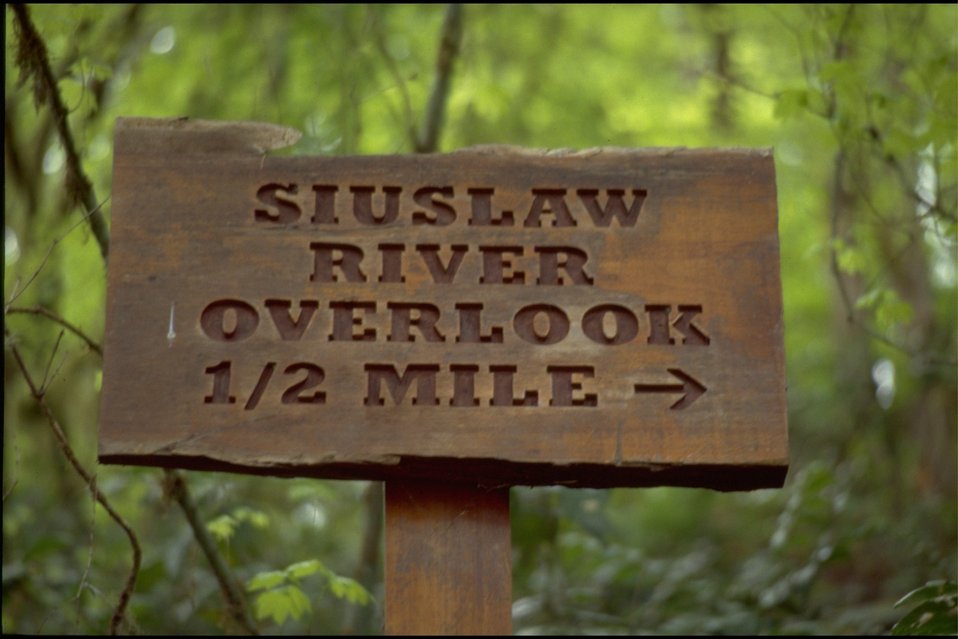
Clay Creek Overlook Sign.